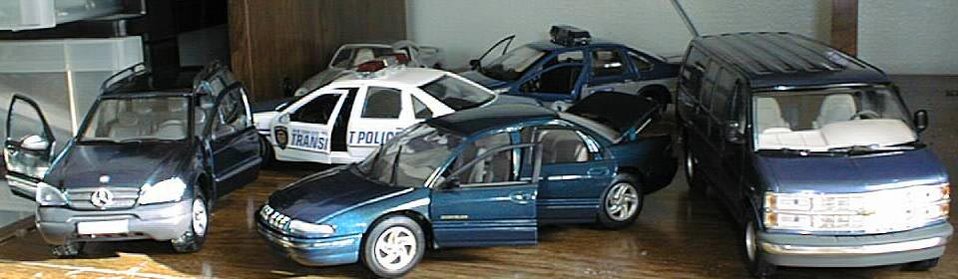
Mike Chapman